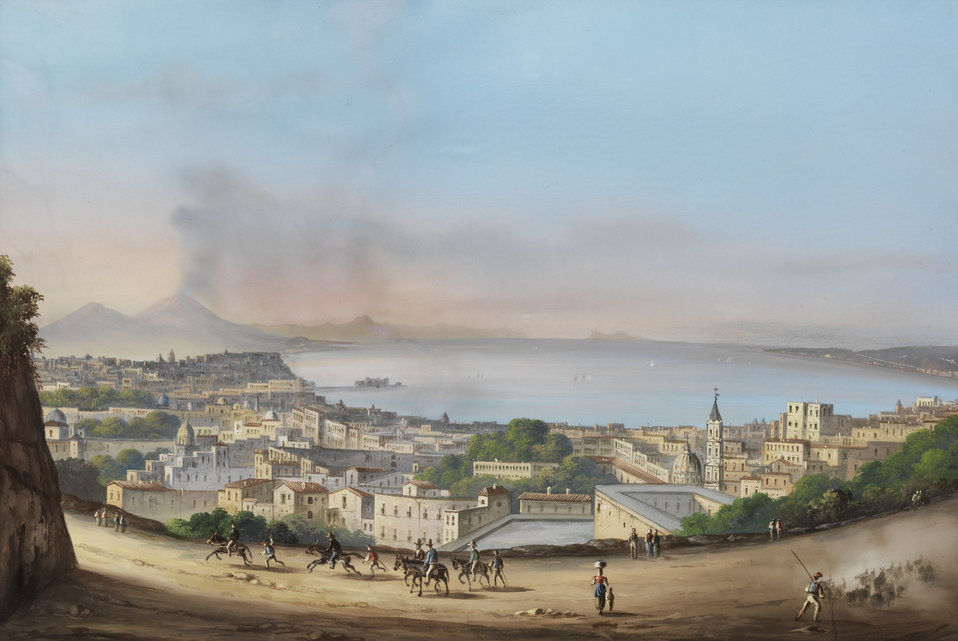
Deutsch: Blick über den Golf von Neapel. Tempera/Gouache auf Karton. 52 x 75 cm.